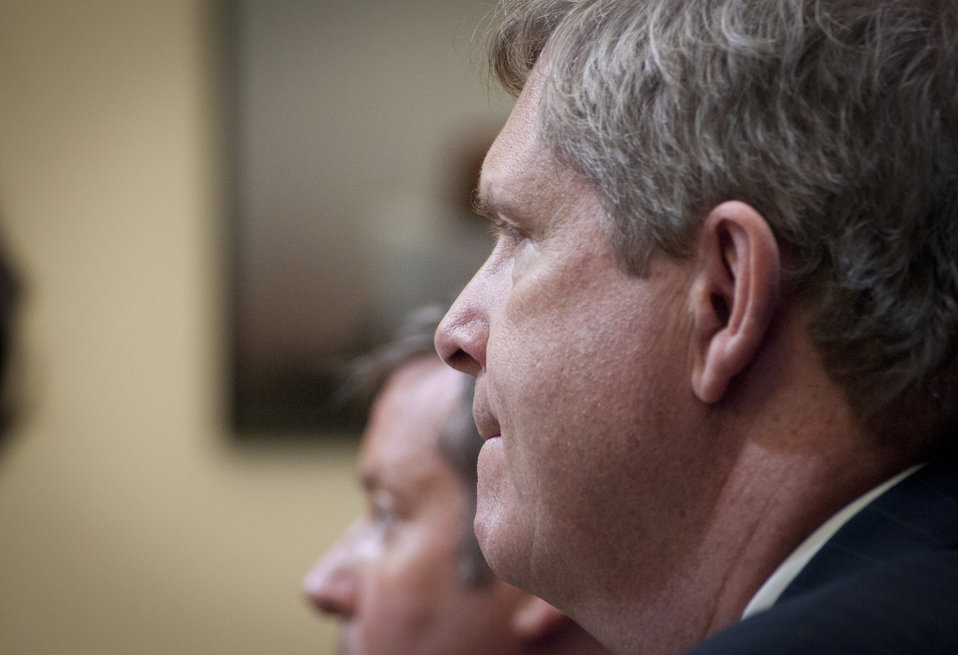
On Wednesday, Jul. 6, 2011, Agriculture Secretary Tom Vilsack attended a meeting at the White House in Washington, DC, with President Barack Obama, the President's Domestic Policy Adviser Melody Barnes and rural communities leaders from across the country for the White House Rural Champions of Change event. The purpose of this meeting is to strengthen rural communities and promote economic growth. Prior to coming here, they were posed with a question about, what should/should not the government be doing to strengthen rural communities and promote economic growth.